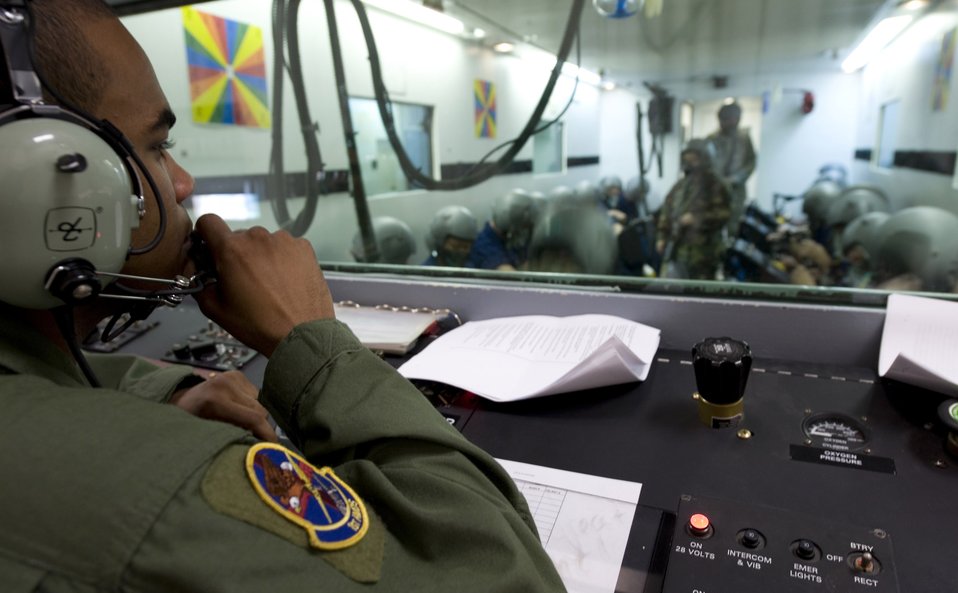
Coast Guard students train in altitude chamber

Airman 1st Class Brendan Davis gives instruction to Coast Guard aviation maintenance technician students from Elizabeth City, N.C., Coast Guard Station, in the altitude chamber during training March 23 at Langley Air Force Base, Va. While in the altitude chamber students are exposed to atmospheric conditions at 25,000 feet. Without the aid of an oxygen mask they experience symptoms of hypoxia, an oxygen deficiency of the tissue and blood cells that causes impairment of function at high altitudes. Airman Davis is an aerospace physiology apprentice with the 1st Aerospace Medicine Squadron.